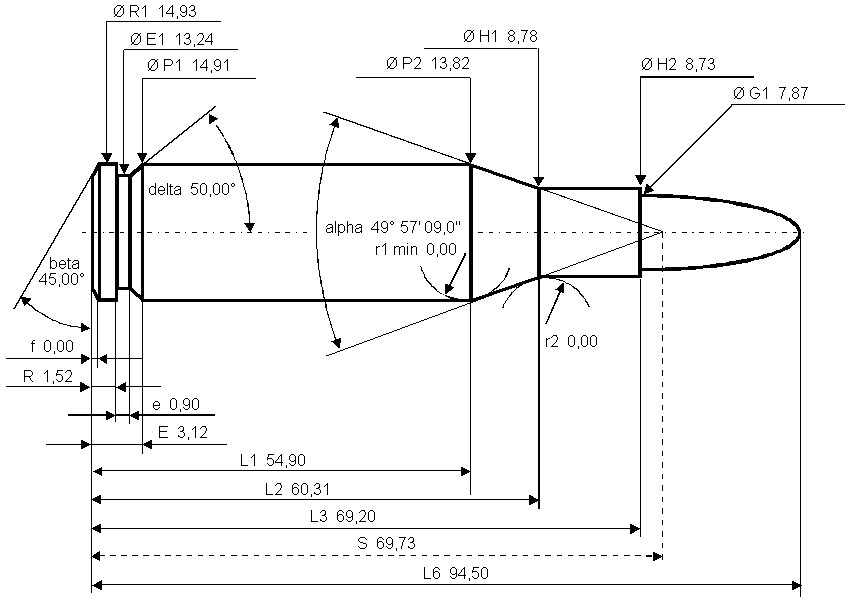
.300 Lapua Magnum maximum C.I.P. cartridge dimensions. All sizes in millimeters (mm).